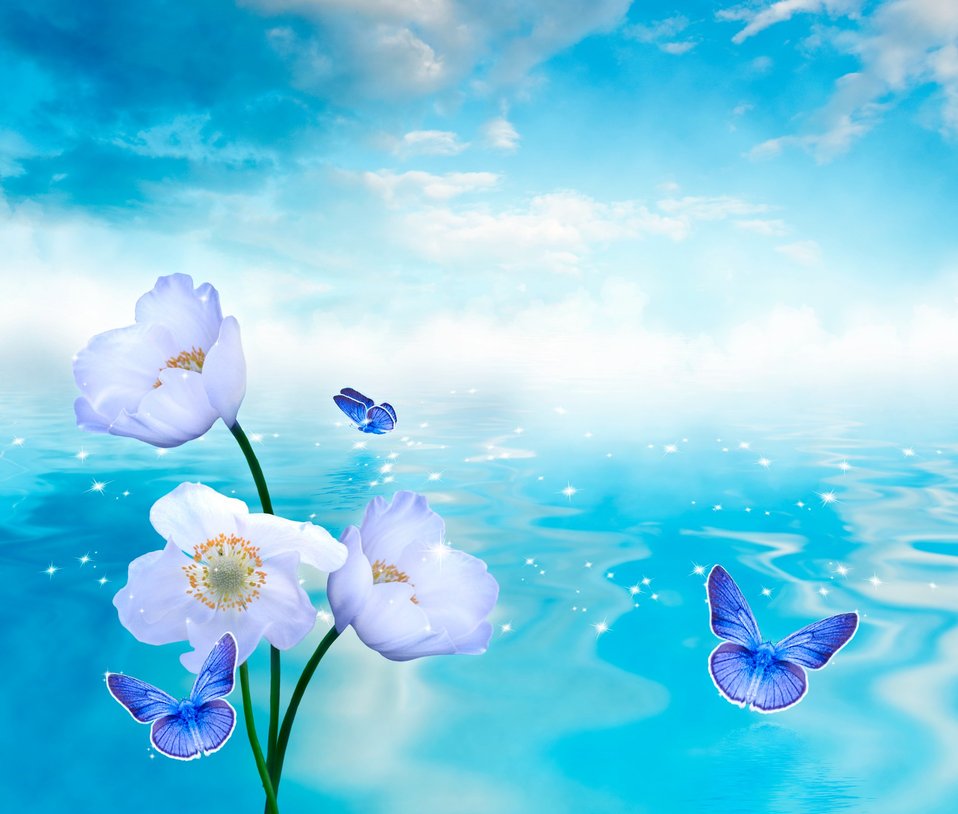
Abstract background with butterfly

Beautiful abstract background with butterflies and flowers against a beautiful sky. collage of my photos.